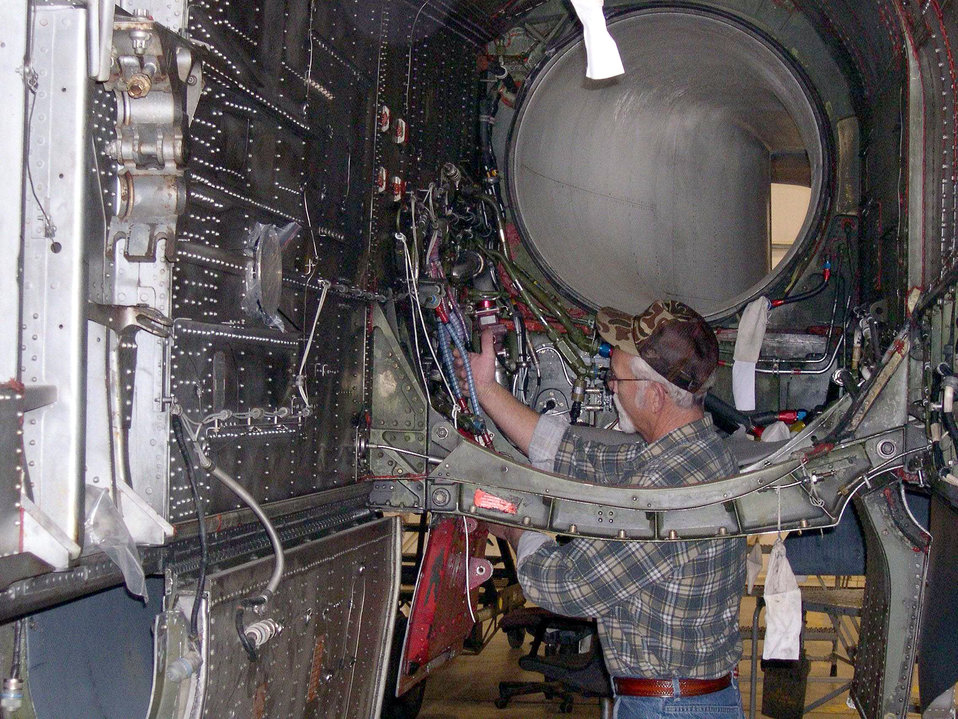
IDEA saves more than $72,000

DAVIS-MONTHAN AIR FORCE BASE, Ariz. -- Steven Herman inspects work done on an F-4 being regenerated. Mr. Herman was awarded $10,000 for saving the Air Force and the Aerospace Maintenance and Regeneration Center more than $72,000 in its first year. He is a pneudraulics systems specialist at AMARC.